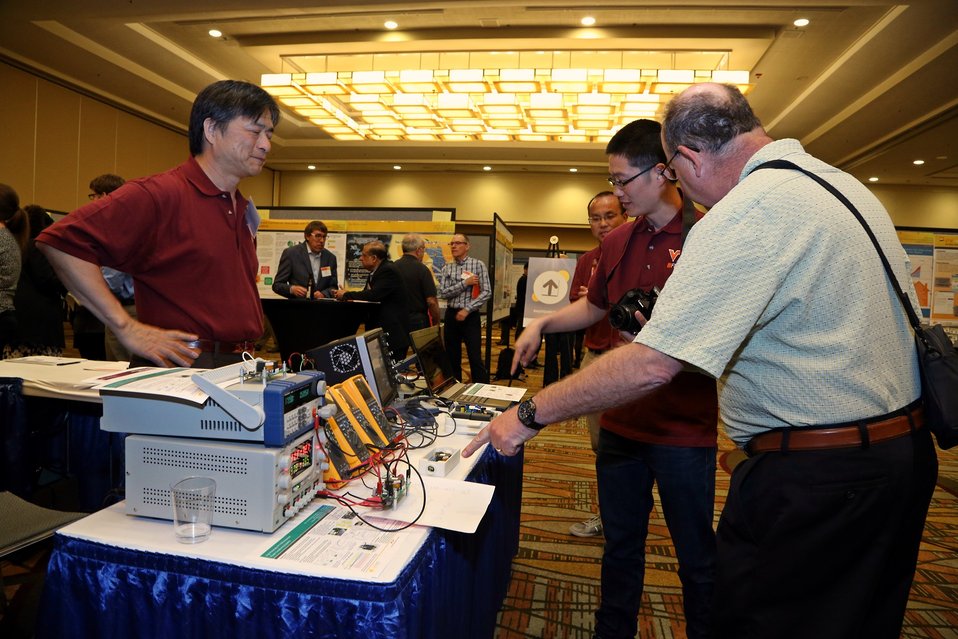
Tech Forum 14

Members of Virginia Tech talking to attendees at their booth.